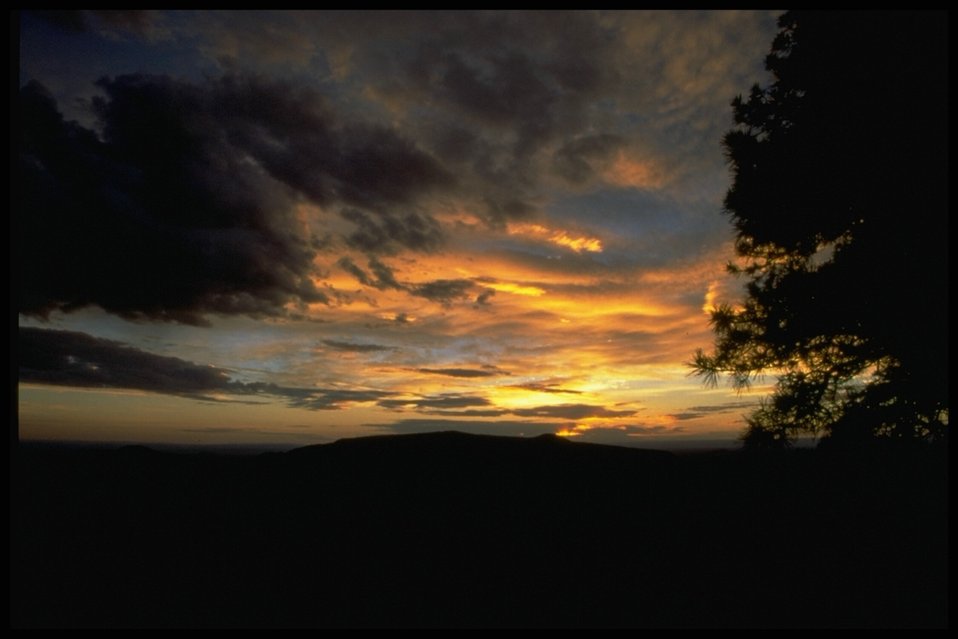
A beautiful Arizona sunset over the Grand Canyon-Parashant National Monument.